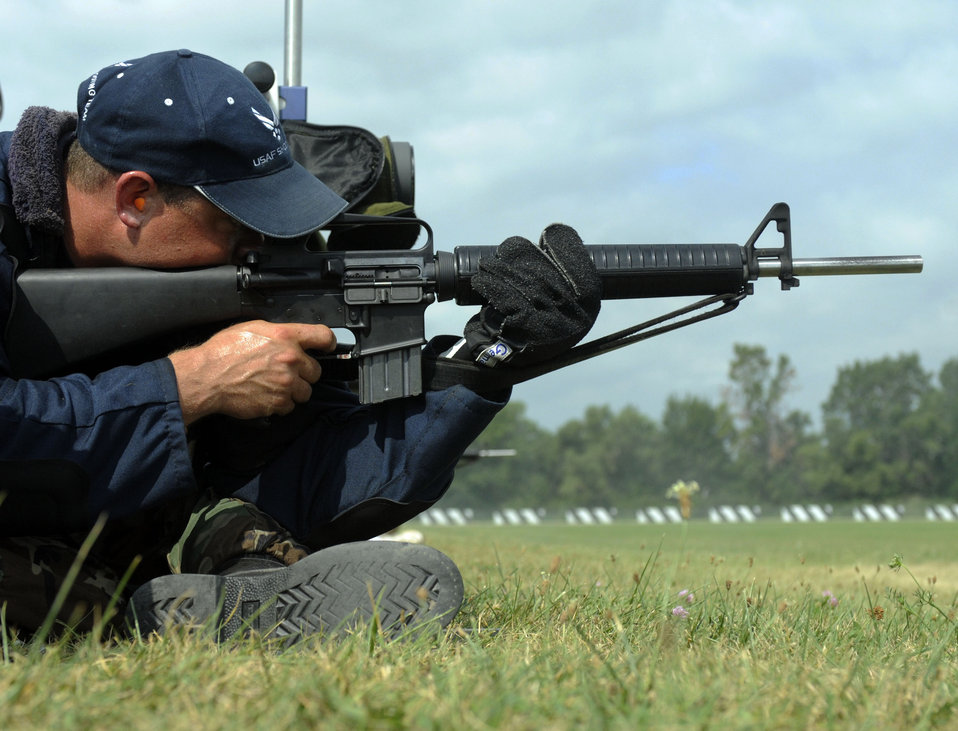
U.S. Air Force Shooting Team

Master Sgt. Matthew Griffin, a member of the U.S. Air Force Shooting Team, prepares to fire at his target from the seated position during the 200-meter portion of the high power rifle competition of the 2009 National Rifle and Pistol Championships at Camp Perry, Ohio. Sergeant Griffin is a Reservist from the 934th Airlift Wing at the Minneapolis Air Reserve Station, Minneapolis, Minn.